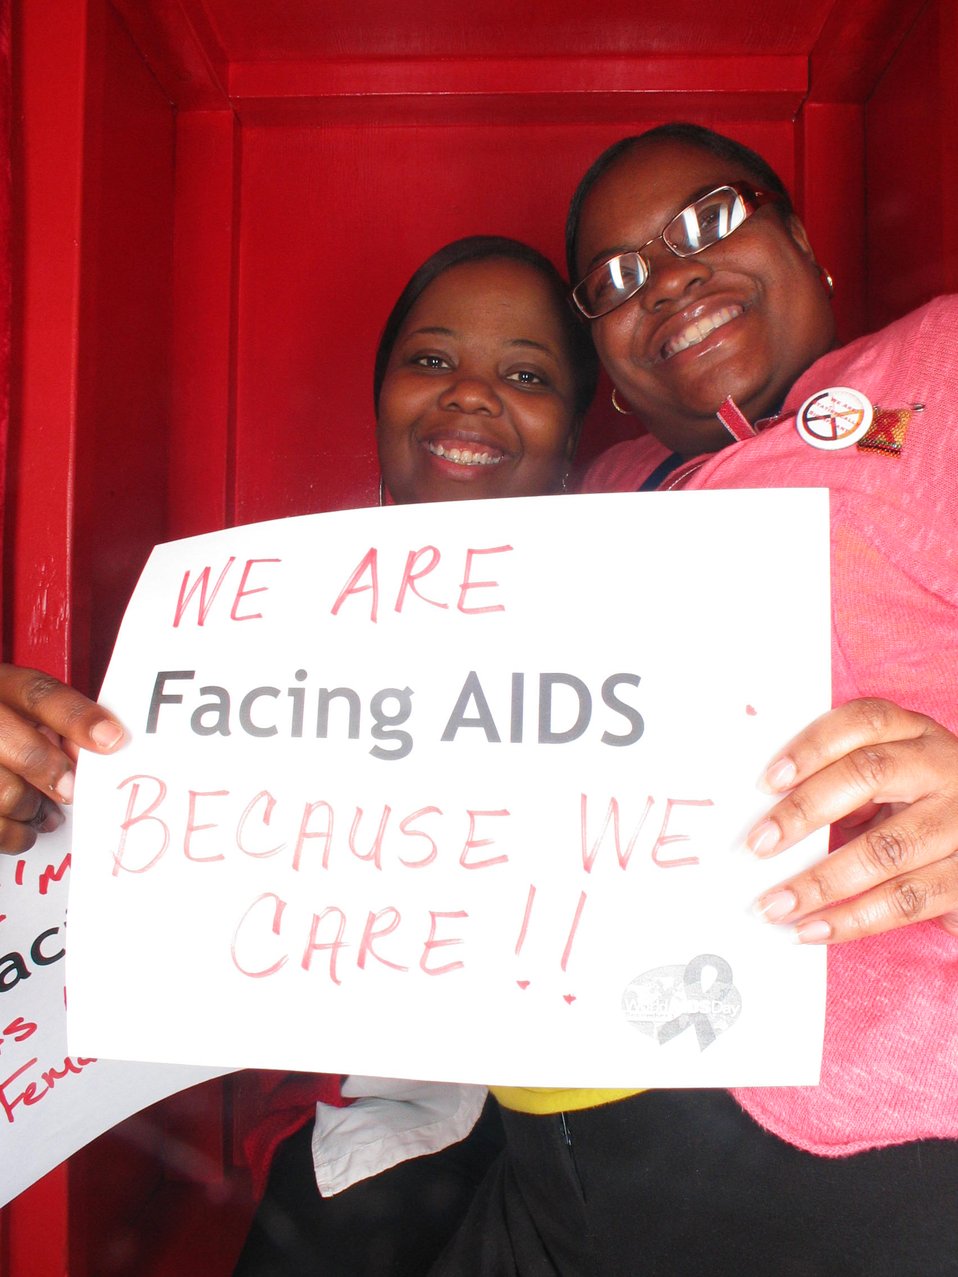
We are Facing AIDS because we care!!